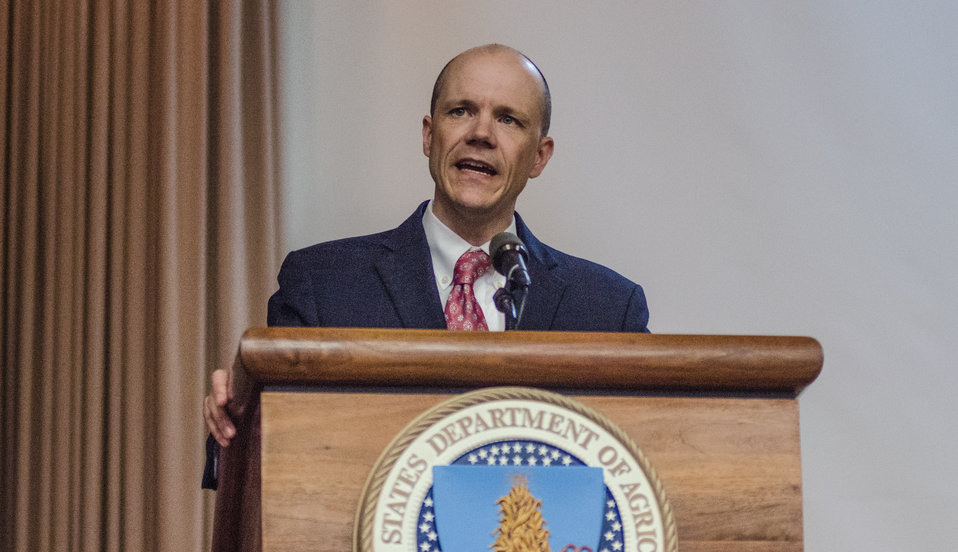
U.S. Department of Agriculture (USDA) Rural Development’s (RD) Acting Under Secretary Doug O'Brien speaks at the 2nd Annual Cultural Transformation kickoff opening ceremony and forums, themed “Employees Influencing Change,” on Tuesday, Aug. 13, 2013 at USDA in Washington, D.C.